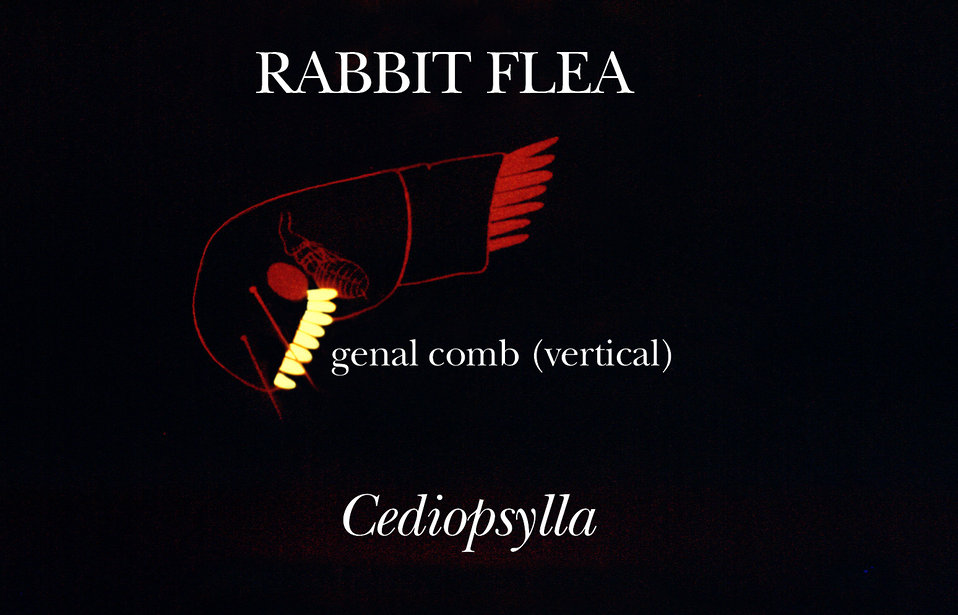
This illustration shows one of the identifying characteristics found on the rabbit flea from the genus Cediopsylla.